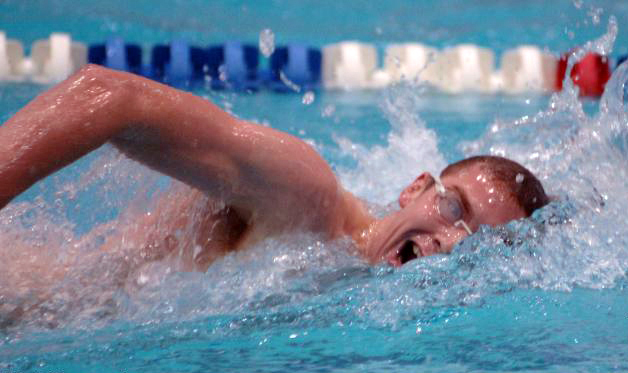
Academy grad named 2006 MWC male student-athlete

U.S. Air Force Academy 2006 graduate Matt Karmondy was honored as the 2005 Mountain West Conference Male Student-Athlete of the Year.